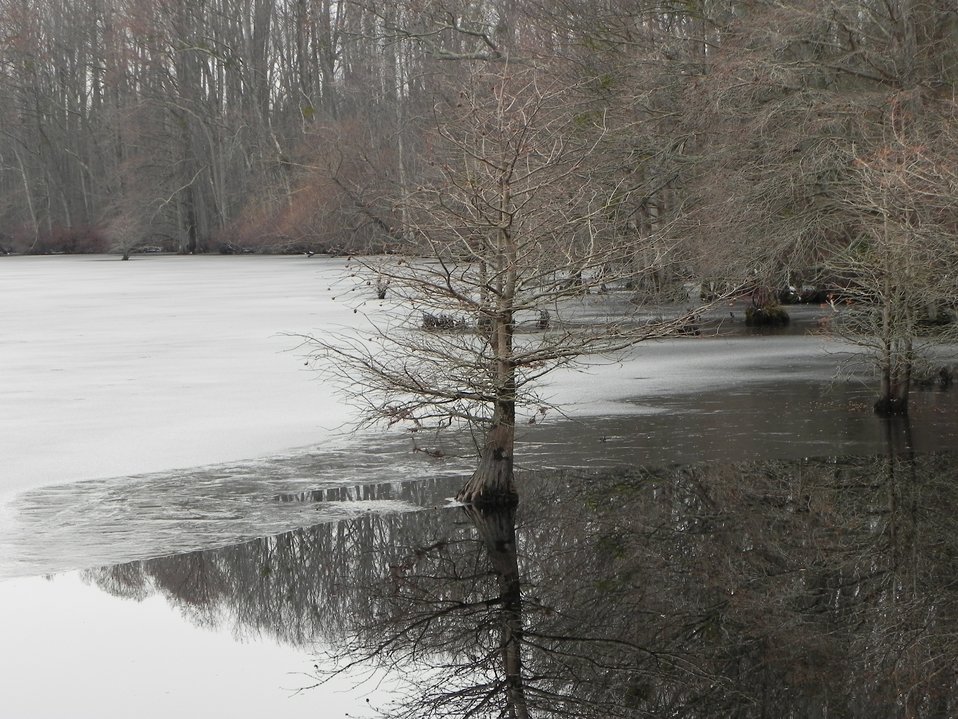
Frozen Lake Drummond

Great Dismal Swamp National Wildlife Refuge, VA.